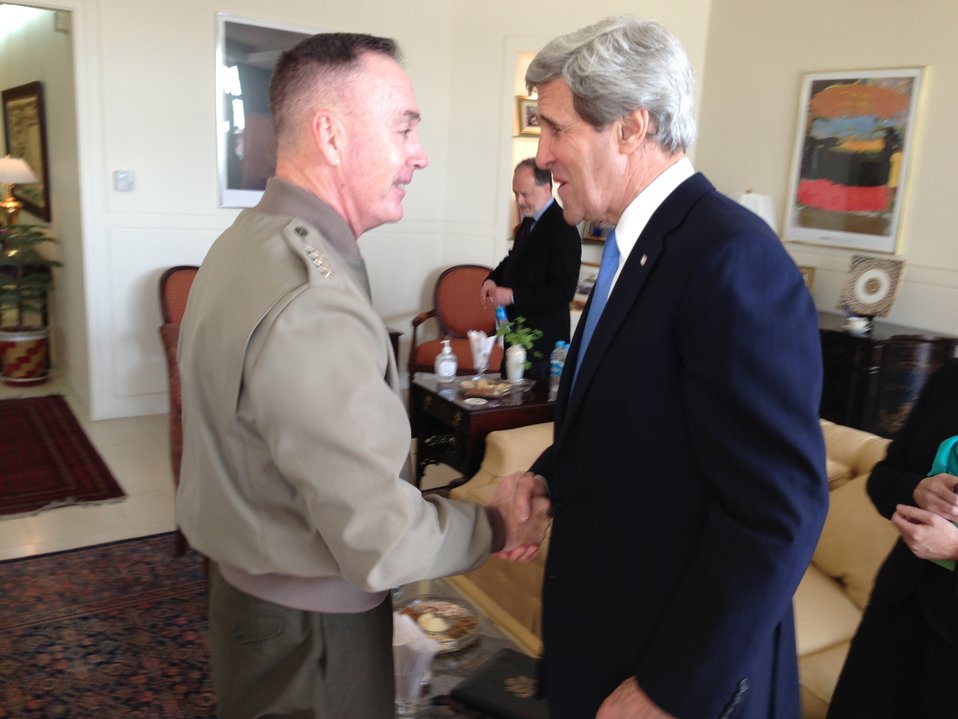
Secretary Kerry and General Dunford In Kabul

U.S. Secretary of State John Kerry chats with Commander of the International Security Assistance Force and U.S. Forces Afghanistan (USFOR-A) Joseph Dunford in Kabul, Afghanistan on March 25, 2013.